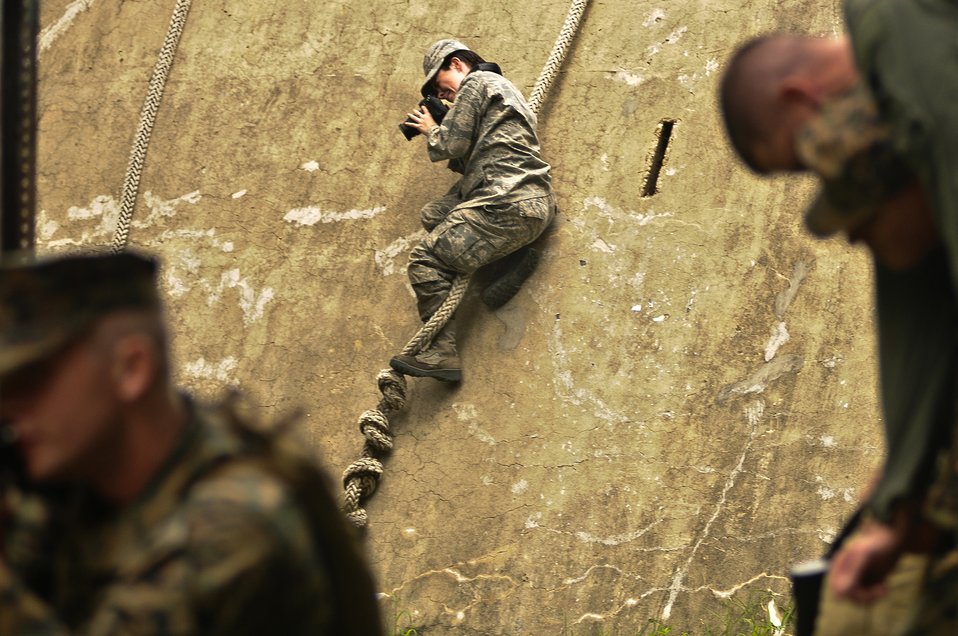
Shutter Training

Airman Basic Stephanie Ashley takes a photograph during a field training exercise on Fort George G. Meade, Md. The two-day exercise allows military photography students of the Defense Information School there the opportunity to practice combat photography.